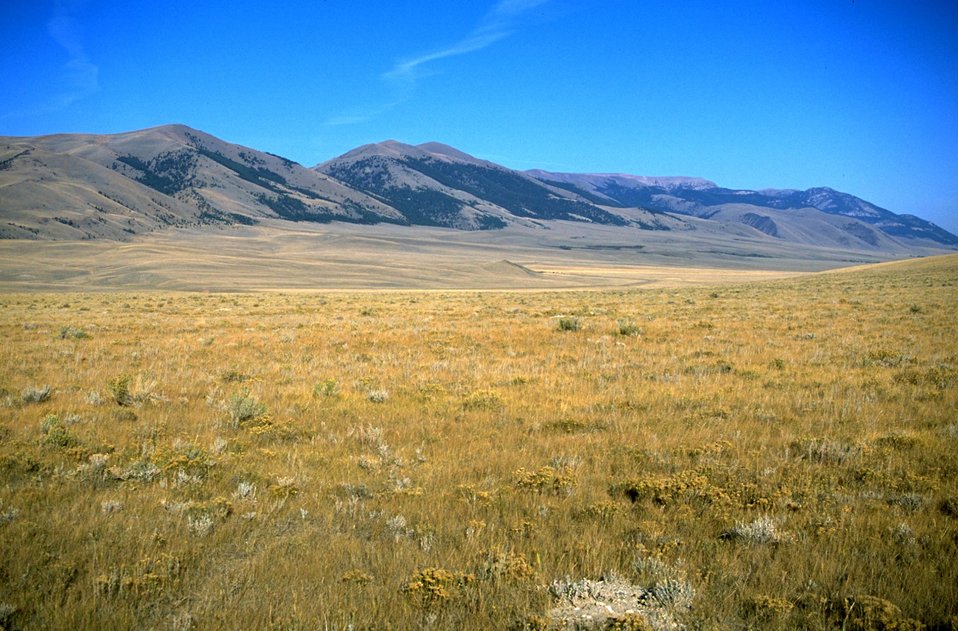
Grassy area with mountains in the background